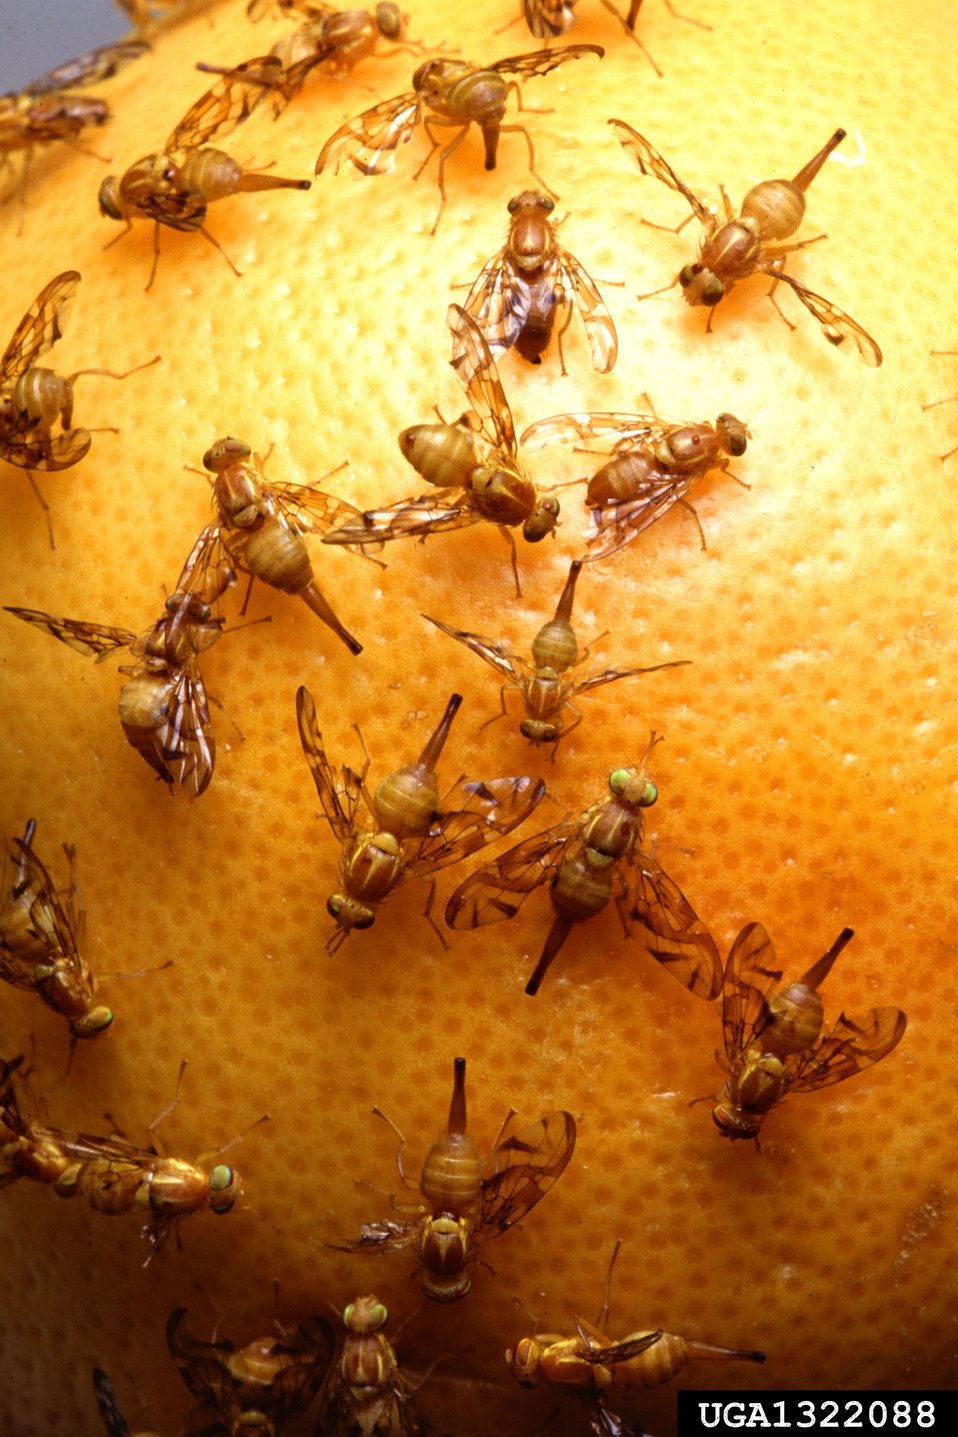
Mexican fruit flies (an invasive species) feed on citrus fruit. A species is considered invasive when it is nonnative to the ecosystem and its introduction causes or is likely to cause economic or environmental harm or harm to human health. The U.S. Department of Agriculture (USDA) has proclaimed April to be Invasive Plant Pest and Disease Awareness Month. USDA has developed “Seven Ways to Leave Hungry Pests Behind” to aid Americans in protecting America’s agricultural bounty and natural beauty.